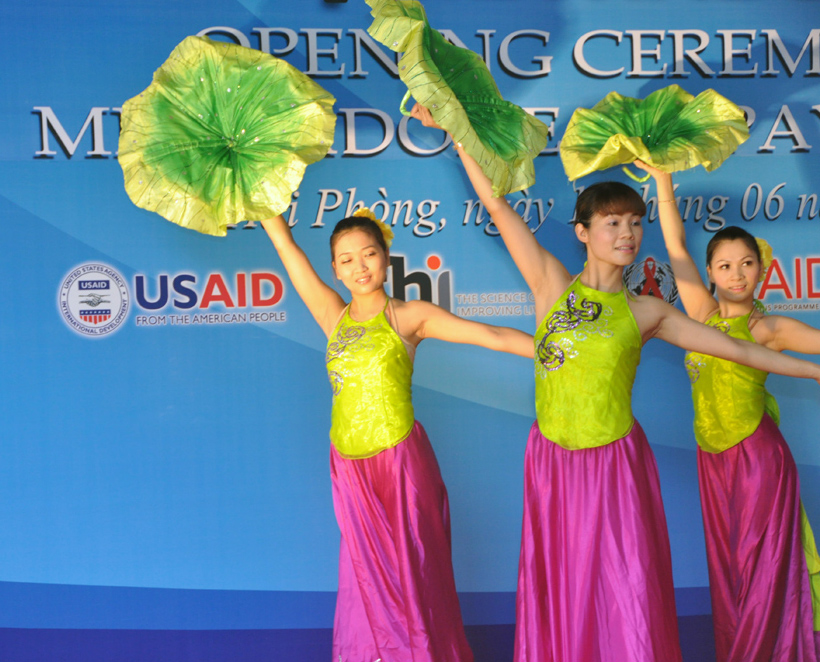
Co-pay Methadone Treatment Center Opens in Hai Phong on June 18, 2011